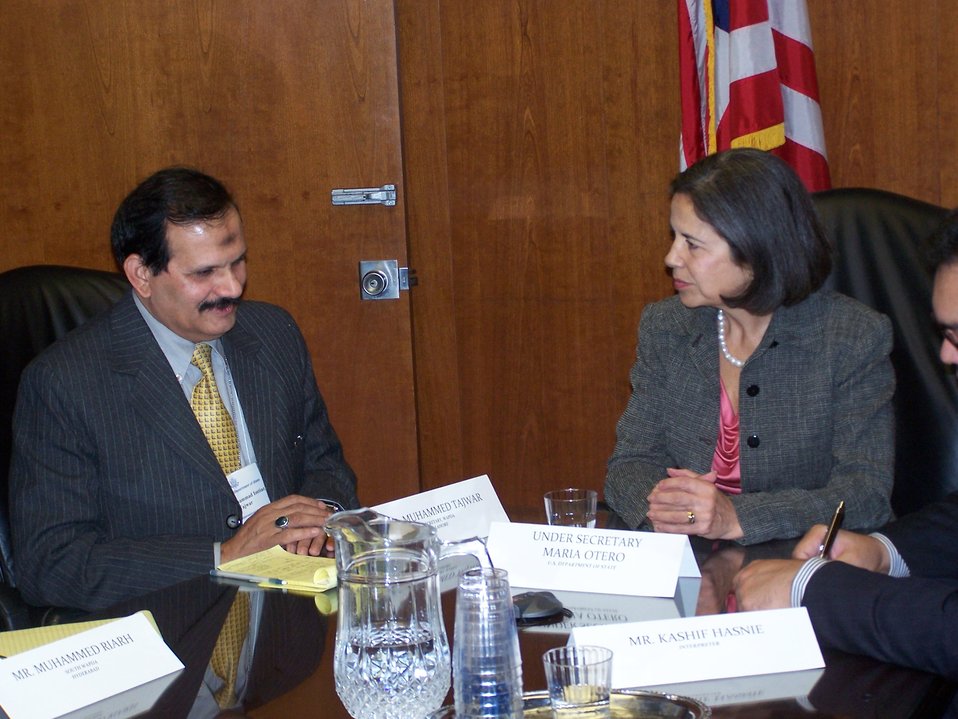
Under Secretary Otero Chairs a Working Group With Pakistani Water Experts

U.S. Under Secretary of State for Democracy and Global Affairs Maria Otero chairs a meeting with a group of Pakistani water experts who are visiting the United States this month as part of the International Visitor Leadership Program (IVLP) at the U.S Department of State in Washington, D.C., on October 19, 2010.